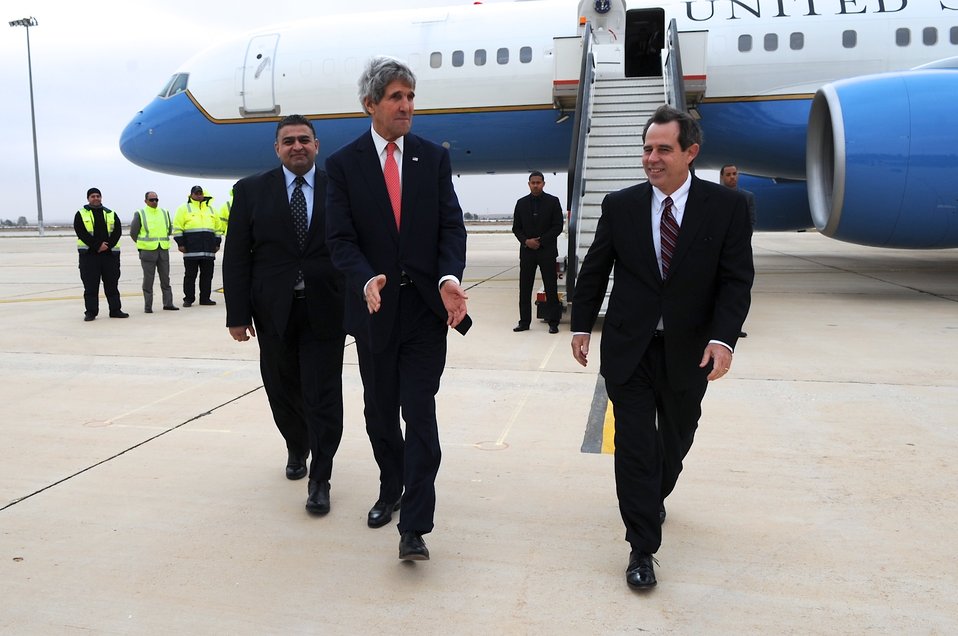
Secretary Kerry Arrives in Amman to Brief on Middle East Peace Talks

U.S. Secretary of State John Kerry, accompanied by U.S. Ambassador to Jordan Stuart Jones, walks to his automobile after arriving in Jordan on January 5, 2014, to brief King Abdullah II on his Middle East peace talks.